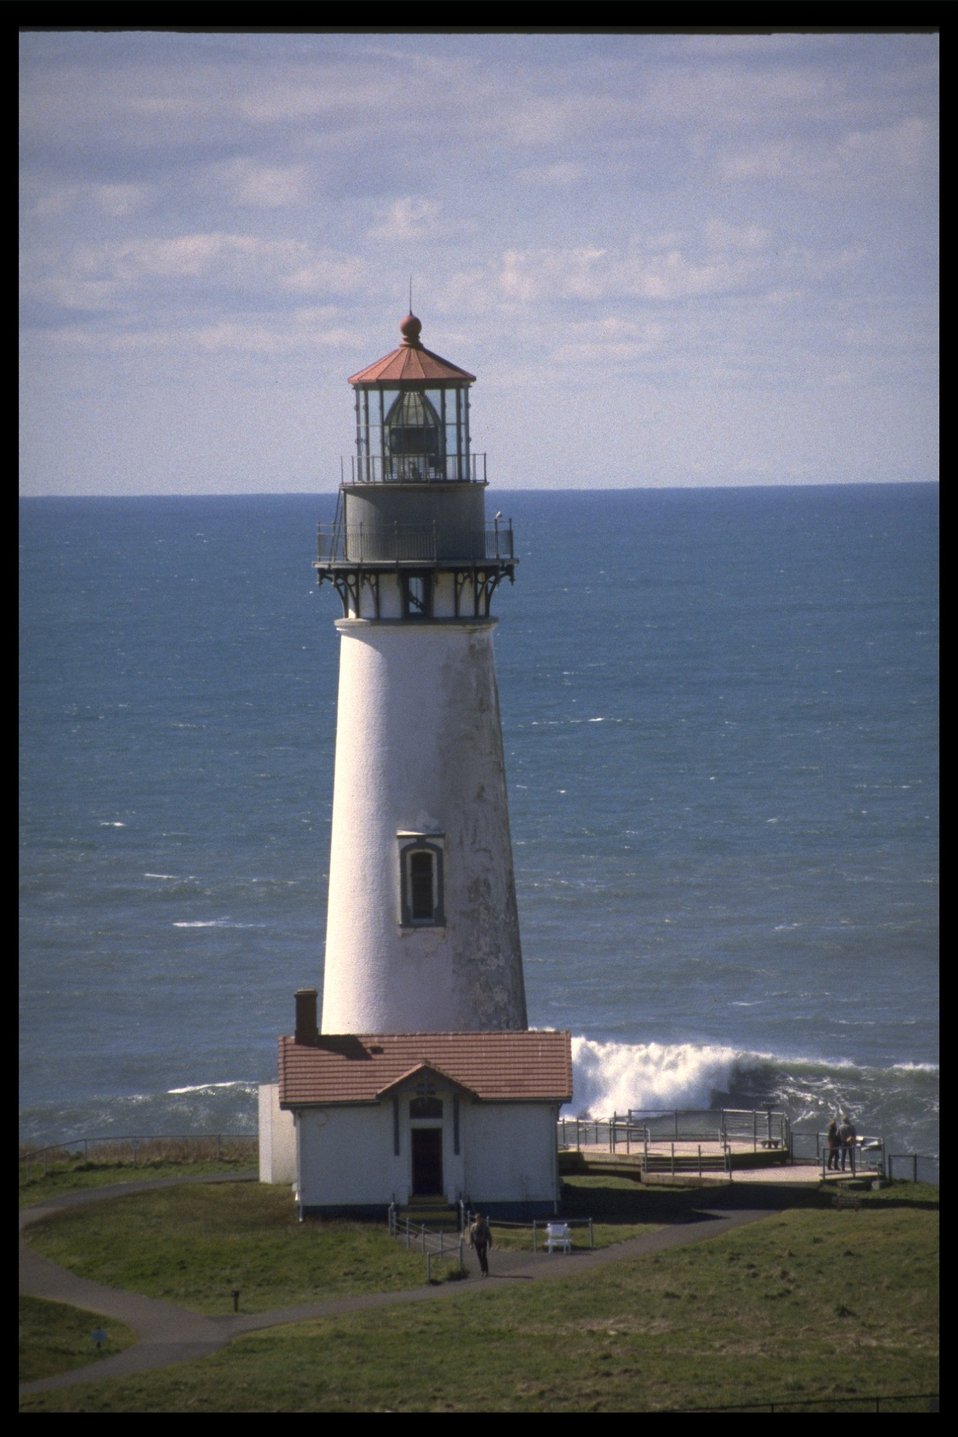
Yaquina Head Lighthouse.